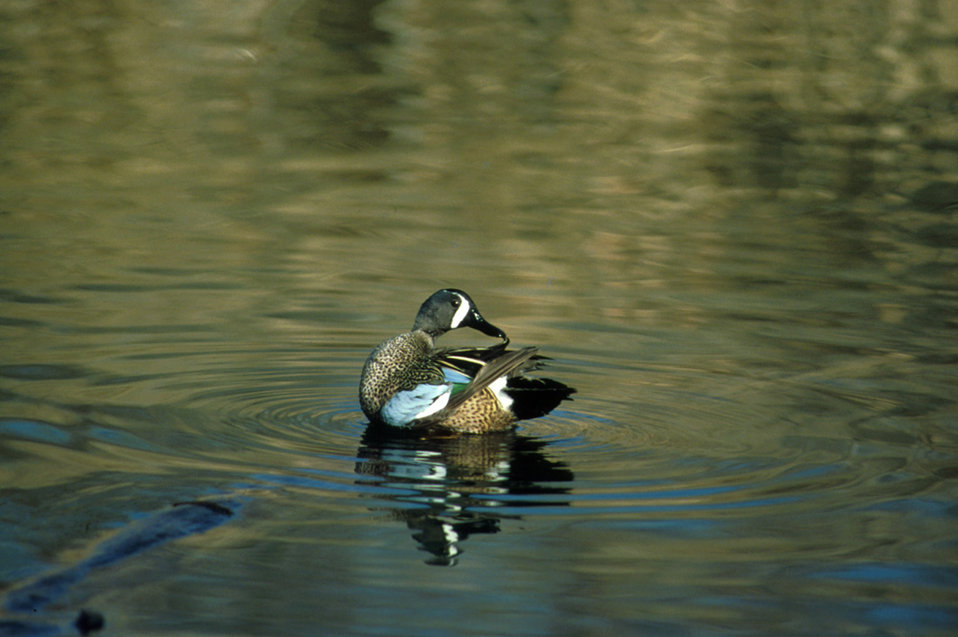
Blue-winged teal-drake

Single blue-winged teal in water; Desota National Wildlife Refuge; Waterfowl;Migratory birds;